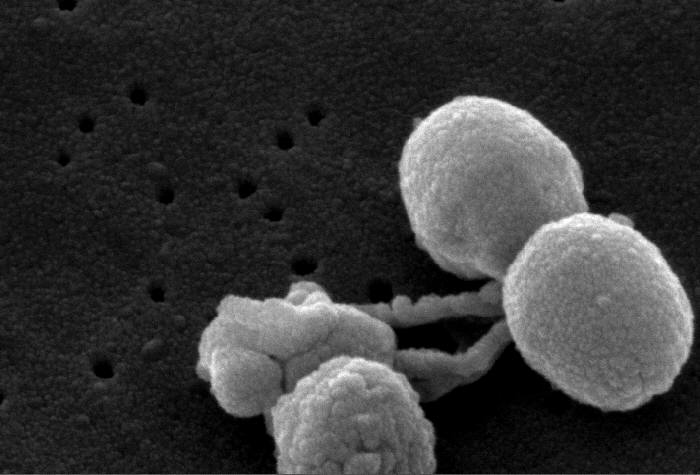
Scanning electron micrograph (SEM) of a number of Gram-positive Streptococcus pneumoniae bacteria.